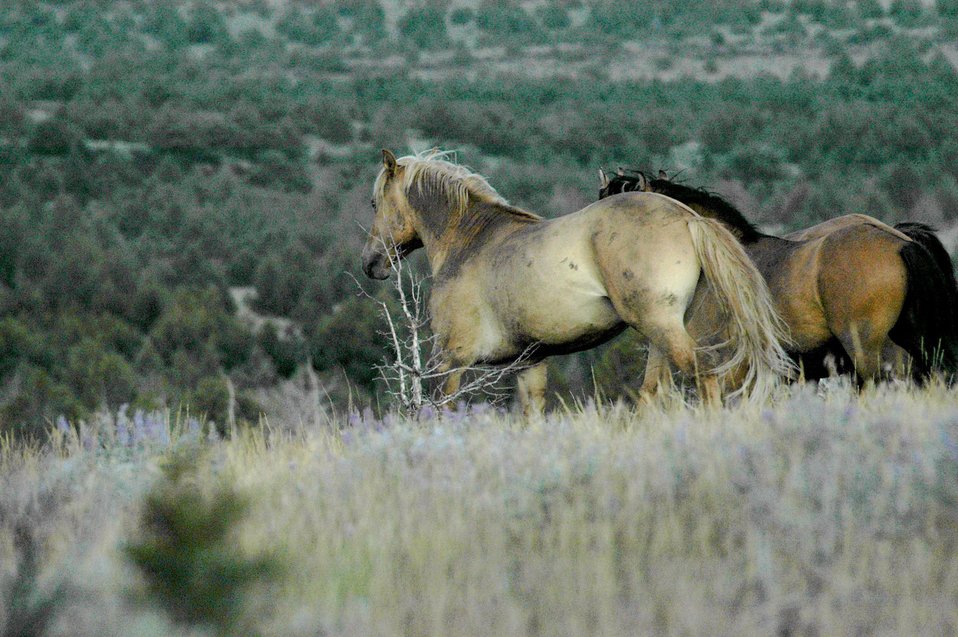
Kiger horses roam the plateaus of the Kiger Wildhorse Herd Management Area near Steens Mountain in Southeastern Oregon.